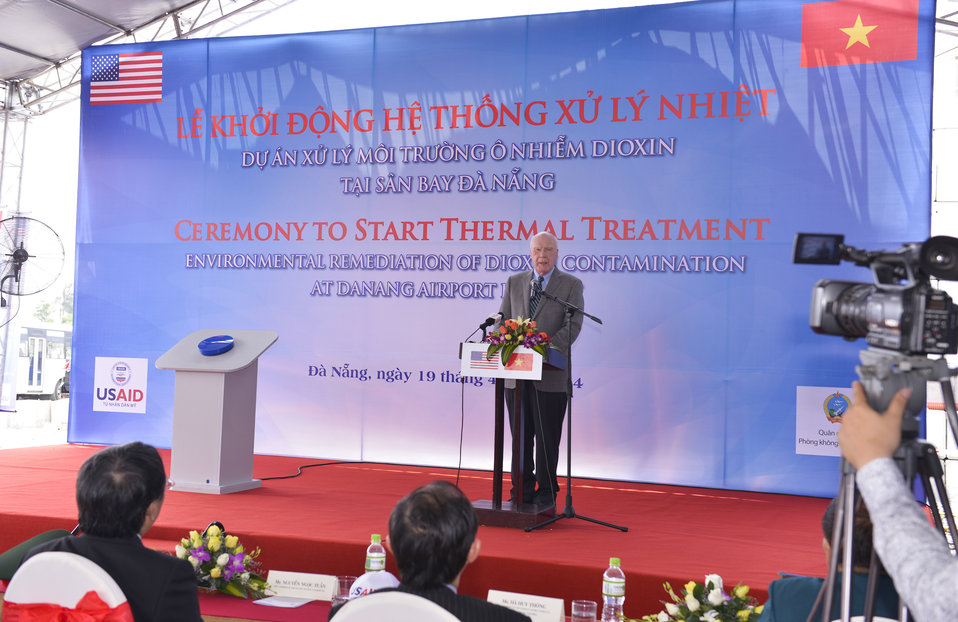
Senator Patrick Leahy speaks at the ceremony to turn on treatment system at Danang Airport

Danang, April 19, 2014.